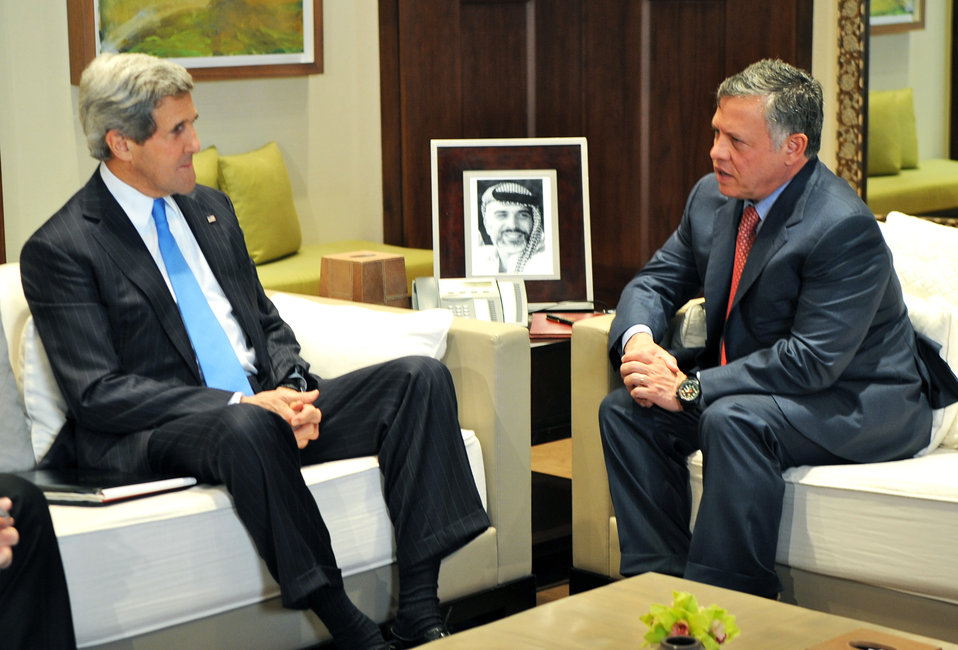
Secretary Kerry Meets With Jordanian King Abdullah II

U.S. Secretary of State John Kerry meets with Jordanian King Abdullah II in Amman, Jordan, on May 22, 2013.